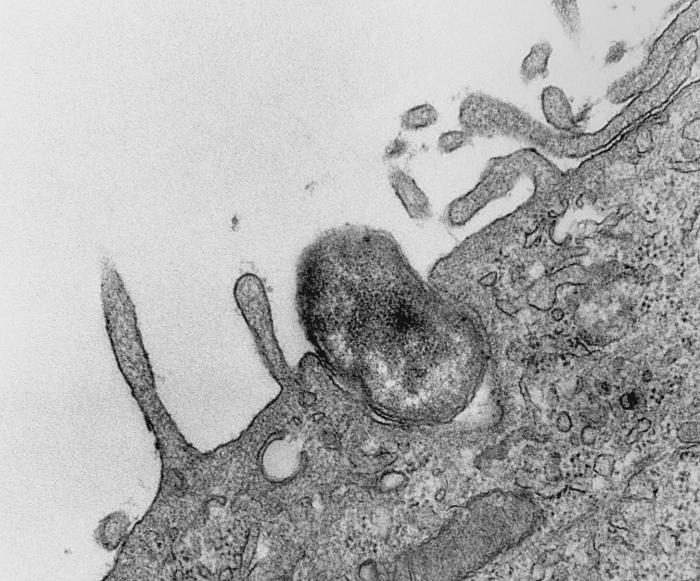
Phagocytosis of Rickettsia tsutsugamushi by mouse peritoneal mesothelial cell.